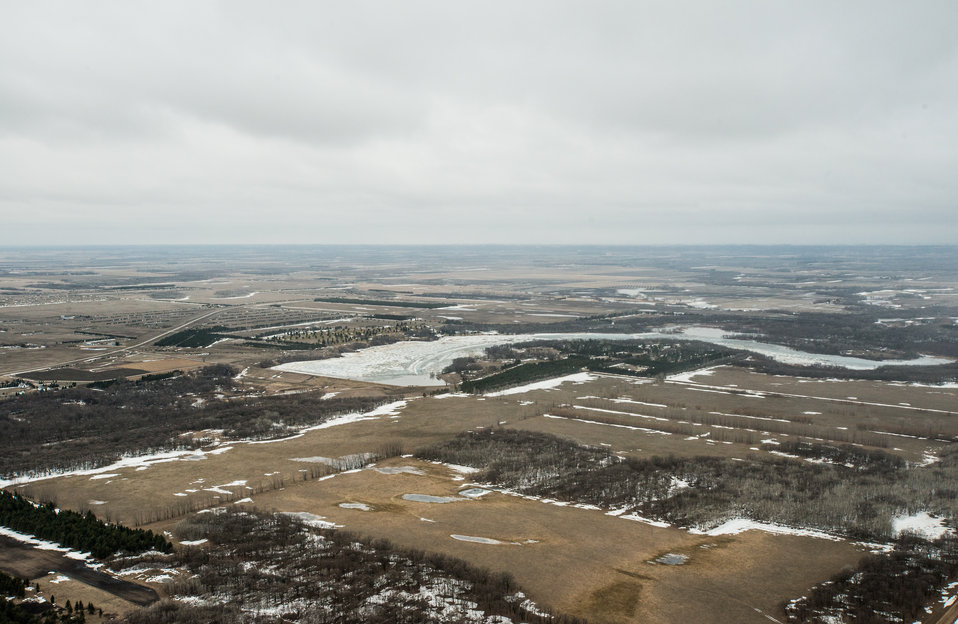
Renwick Dam, in Pembina County, ND, part of the Red River basin, on Wednesday, May 1, 2013. For information about this and other programs from the USDA Red River Basin Initiative (RRBI) please see www.mn.nrcs.usda.gov/news/features13/RRBI.html.